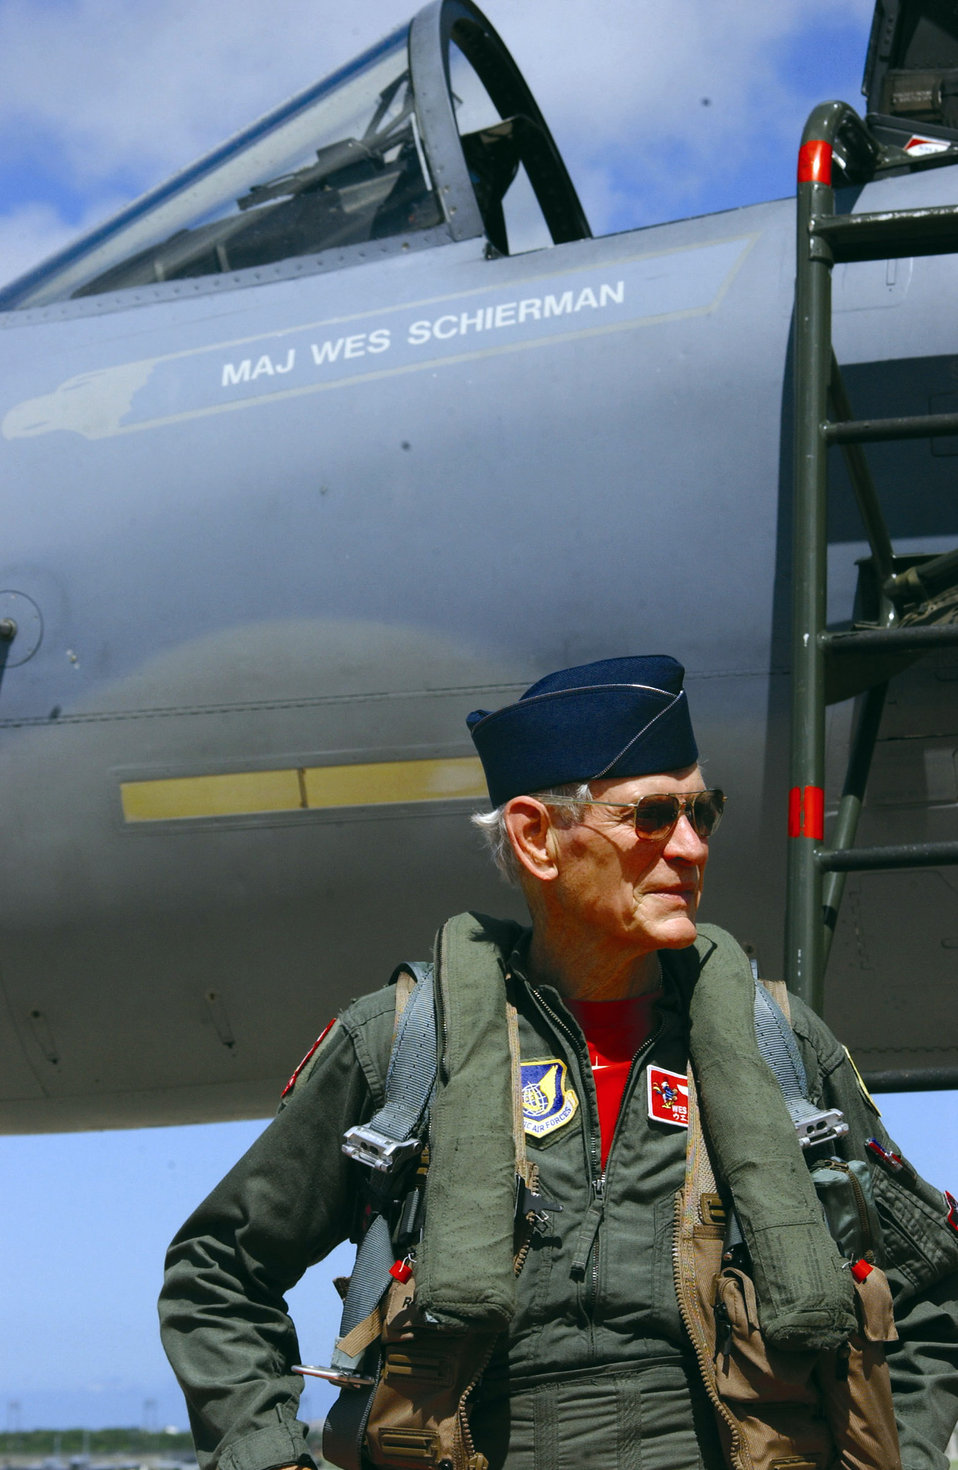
Former POW ends sortie after 40-year detour

KADENA AIR BASE, Japan -- Retired Maj. Wesley Schierman stands beside an F-15 Eagle after completing his final flight with the 67th Fighter Squadron.